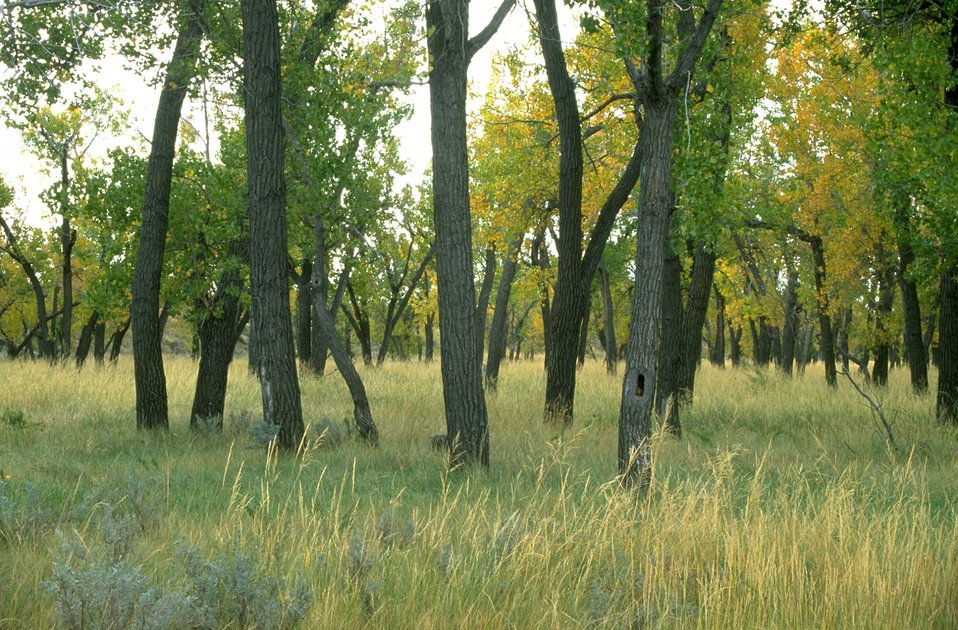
Cottonwood trees at the confluence of the Yellowstone and Powder Rivers